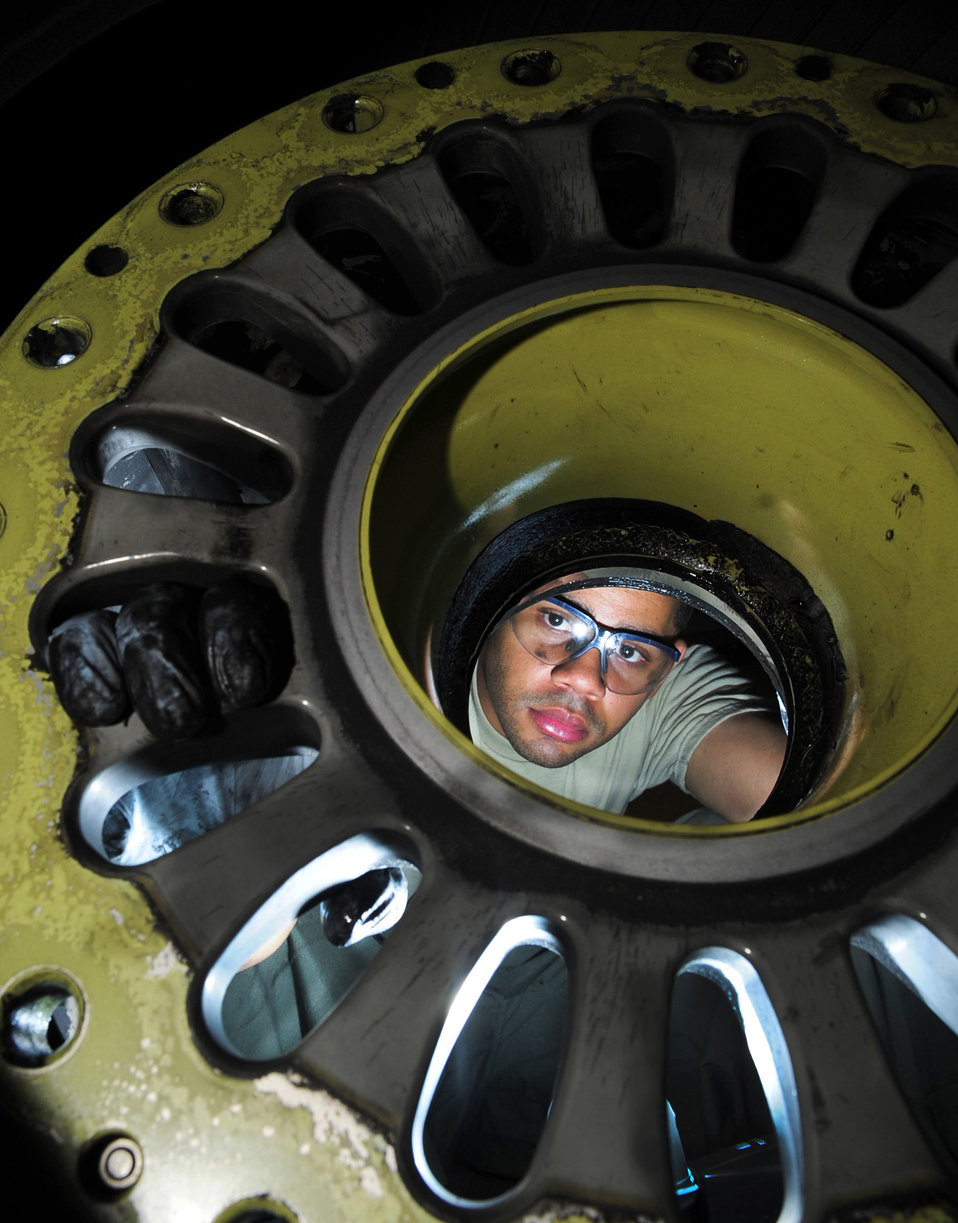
Behind the wheel

Staff Sgt. Daniel Fowler checks to ensure all bolts are removed from a wheel assembly prior to removing the tire from the wheel June 20, 2011, at Royal Air Force Lakenheath, England. Sergeant Fowler is an aero repair craftsman assigned to the 100th Maintenance Squadron.